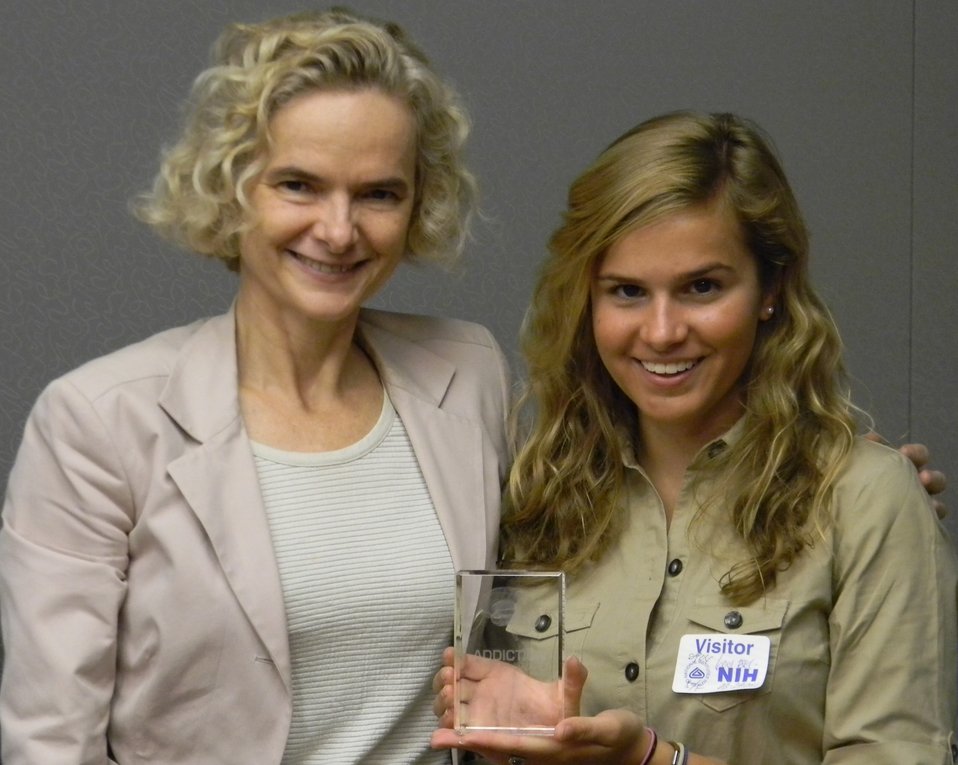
Volkow and Schumacher

Dr. Nora Volkow (NIDA Director) and Darby Kathryn Schumacher, 2nd place winner of the 2011 Addiction Science Award